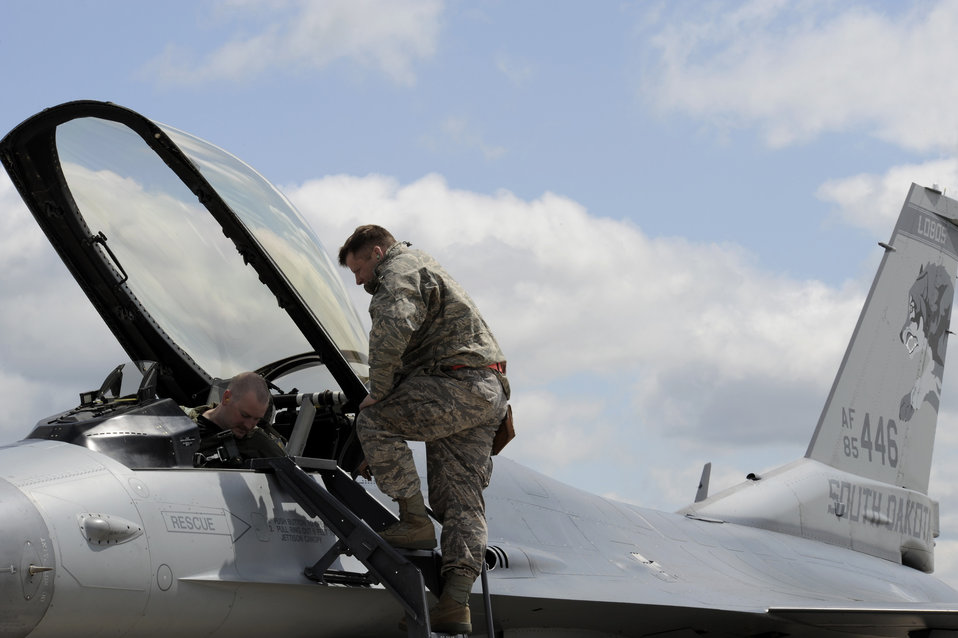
Maple Flag 42

Master Sgt. Todd Schneider, an F-16 Fighting Falcon crew member assigned to the 114th Fighter Wing, Sioux Falls, S.D. Air National Guard, ensures Capt. Kollin Ellis is secure before departure for a training mission during exercise Maple Flag 42 at 4 Wing Cold Lake, Canada, June 4. Maple Flag is a Canadian-sponsored and Air Combat Command supported exercise that provides aircrews simulated air and ground combat training to coalition forces in a NATO environment.